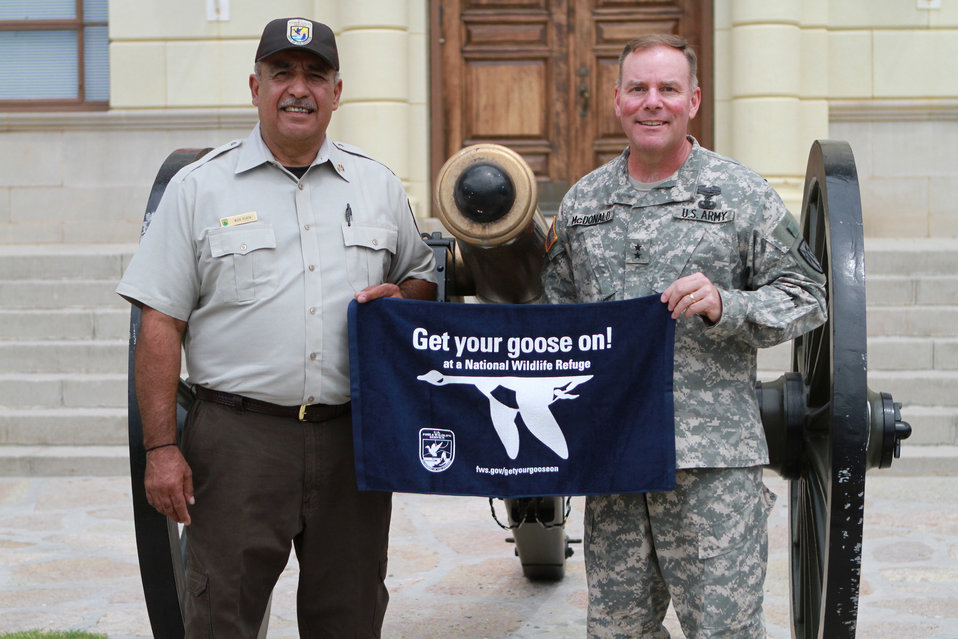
Get Your Goose On!

Wichita Mountains National Wildlife Refuge in Oklahoma.